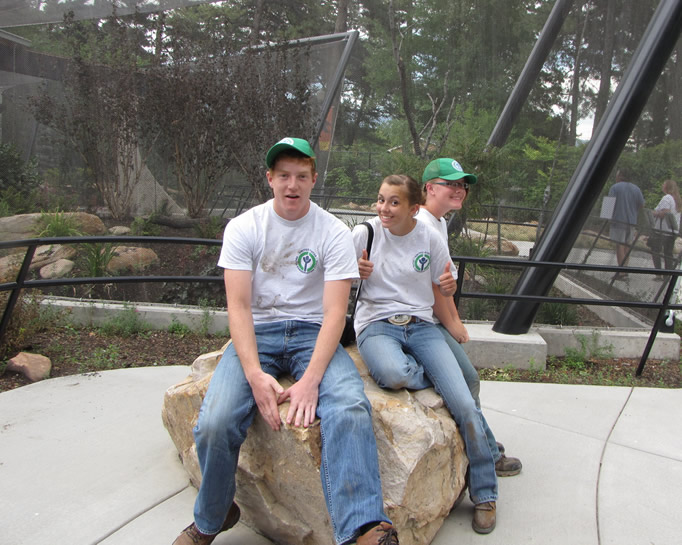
At Tracy Aviary

Youth Conservation Corps crew rests on a rock at Tracy Aviary. Tracy Aviary is located on eight acres of land in the heart of Salt Lake City. A charitable act by Salt Lake City banker Russell Lord Tracy founded Tracy Aviary when he donated his private bird collection to Salt Lake City and its children. Open to the public since 1938, Tracy Aviary maintains a collection of approximately 400 birds representing about 135 species. Many of these birds are considered rare or endangered.